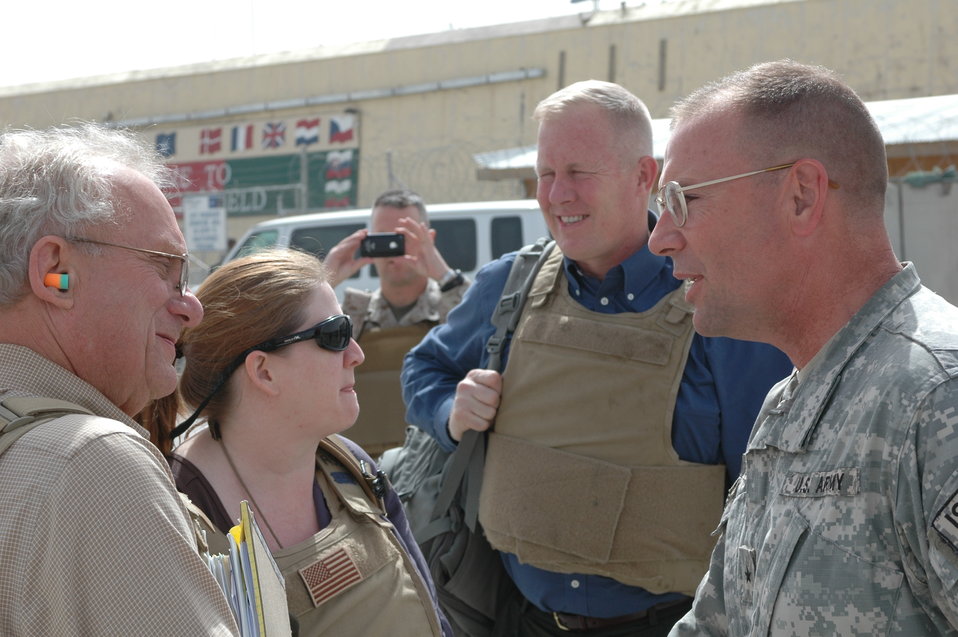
CODEL Berman